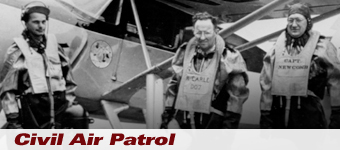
Civil Air Patrol during World War II

A volunteer Civil Air Patrol during World War II .